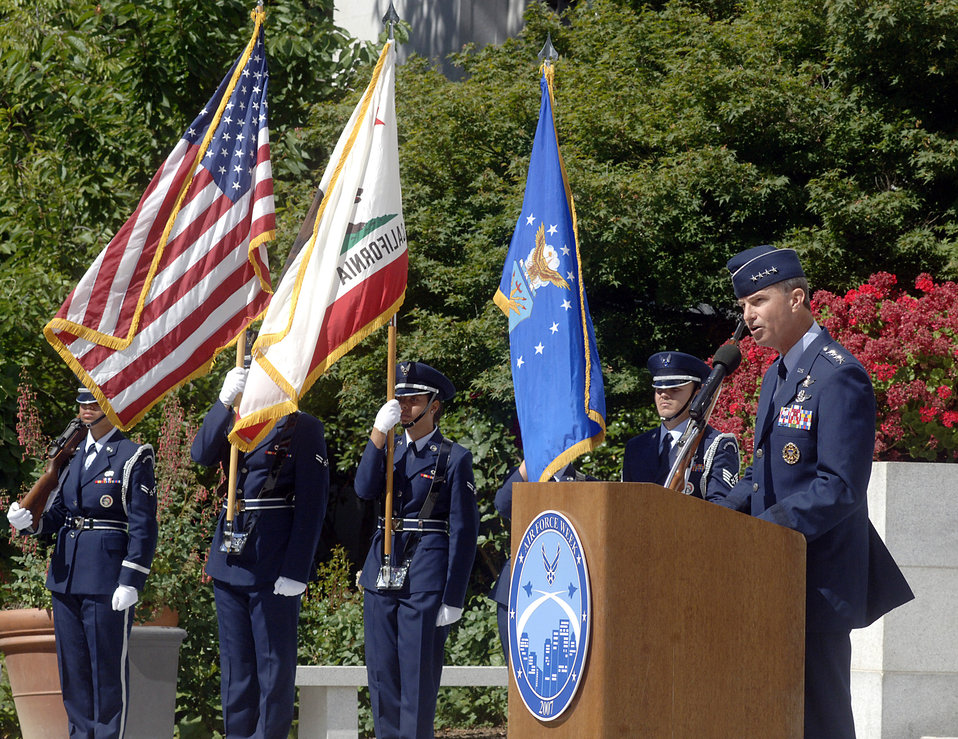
Air Force Week begins in Sacramento

Gen. Kevin P. Chilton addresses the crowd during the Air Force Week California Proclamation Ceremony June 4 at Sacramento, Calif. The purpose of Air Force Week is to inform and educate the American public about the importance and roles of the Air Force in America's national defense. General Chilton is the commander of the Air Force Space Command at Peterson Air Force Base, Colo.